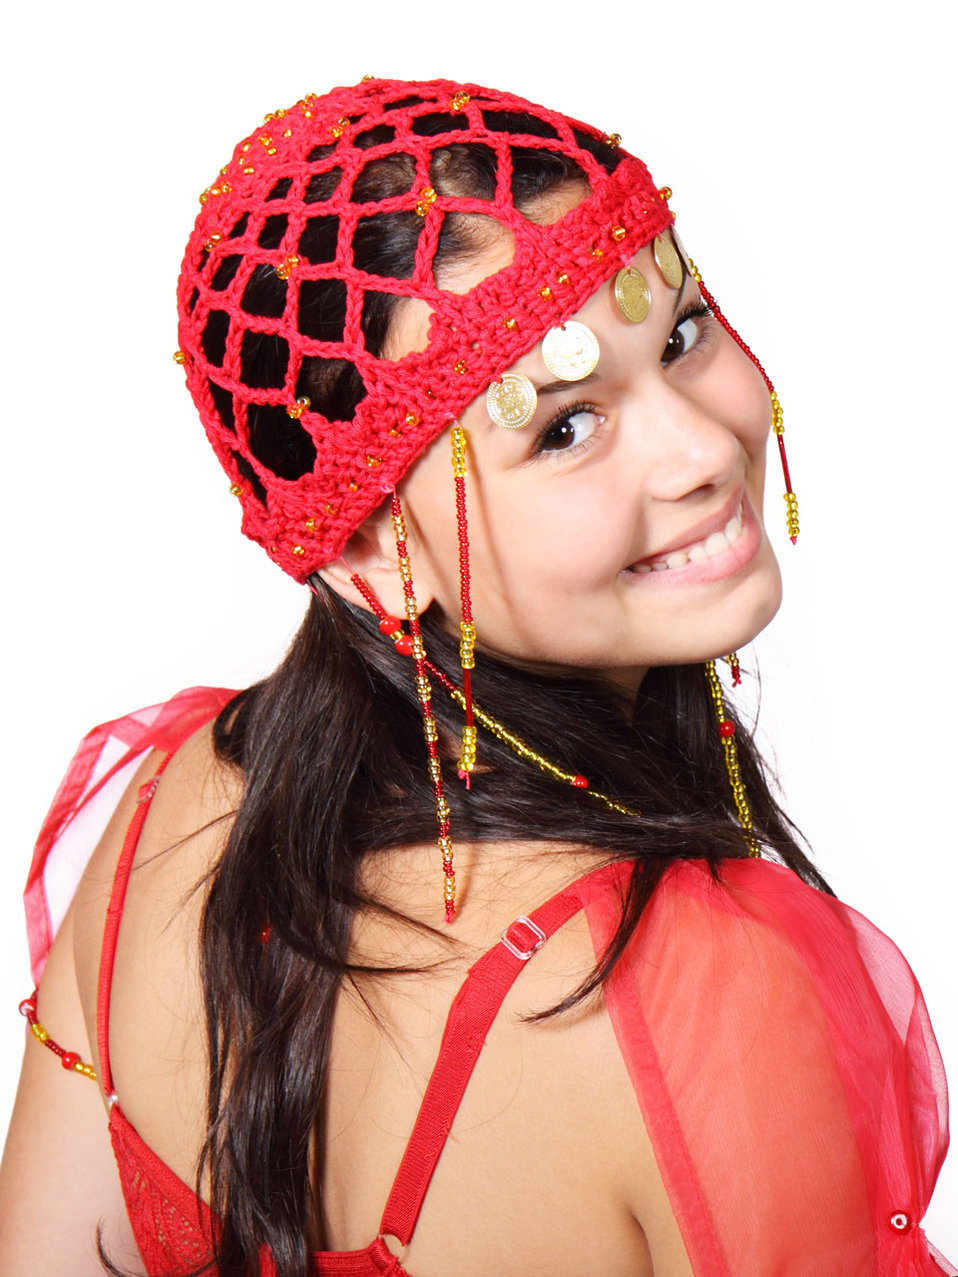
Oriental dancer smiling

Young oriental dancer looking back and smiling isolated on white background.